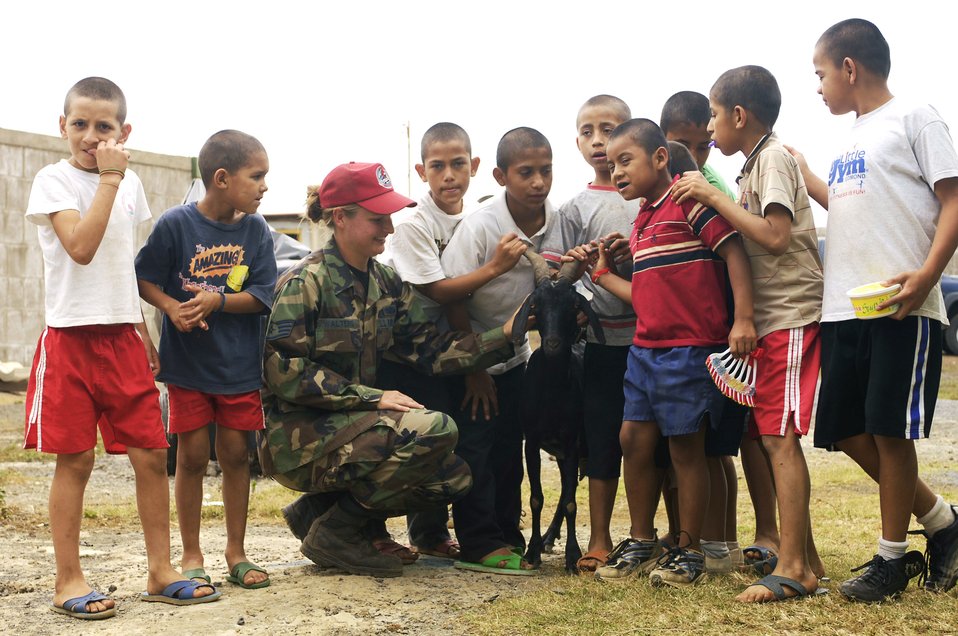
New Horizons-Nicaragua 2007 provides aid, strengthens bonds

These boys show off their goat to Staff Sgt. Holly Walters shortly after she and two other Airmen delivered food to the ABC Feed the Children Orphanage near San Taresa, Nicaragua. Sergeant Walters is a services NCO participating in New Horizons-Nicaragua 2007, a $7.25 million joint U.S. and Nicaraguan military humanitarian and training exercise that will provide a new school and medical clinic, as well as free health and veterinary care, giving aid and strengthening bonds between the two nations.